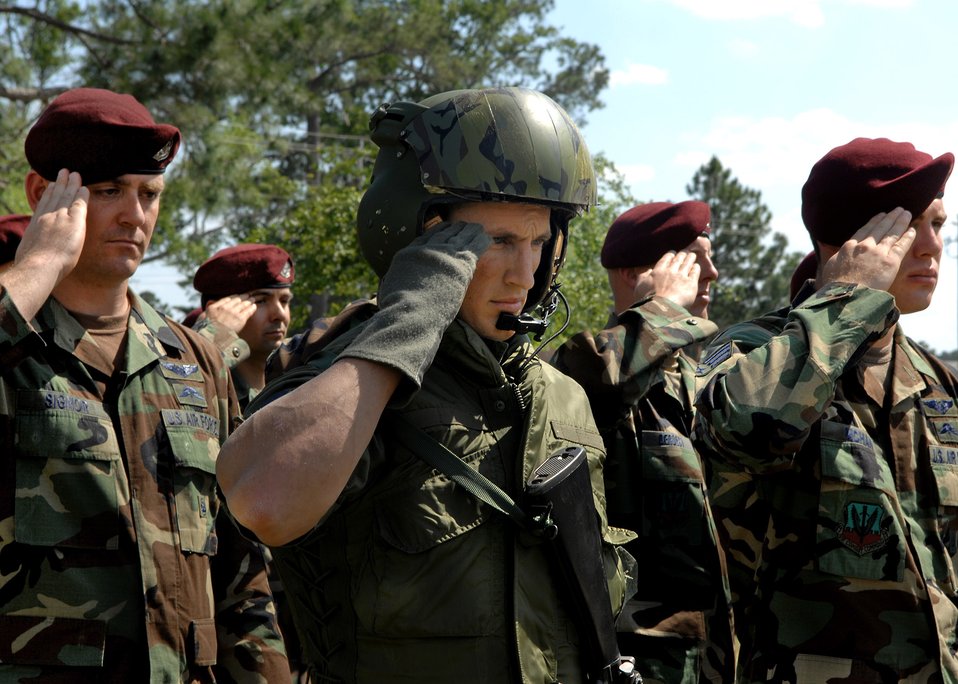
Pitsenbarger re-honored at Moody after 42 years

Staff Sgt. Kyle Minshew salutes while in the 'missing man' formation during a Medal of Honor rededication ceremony at Moody Air Force Base, Ga., April 18. Sergeant Minshew was portraying the role of Airman 1st Class William H. Pitsenbarger, a Medal of Honor recipient. The ceremony was held in honor of Airman Pitsenbarger for his selfless and heroic acts during the Vietnam war that lead to his death on April 11, 1966. Sergeant Minshew is a 38th Rescue Squadron pararescueman.